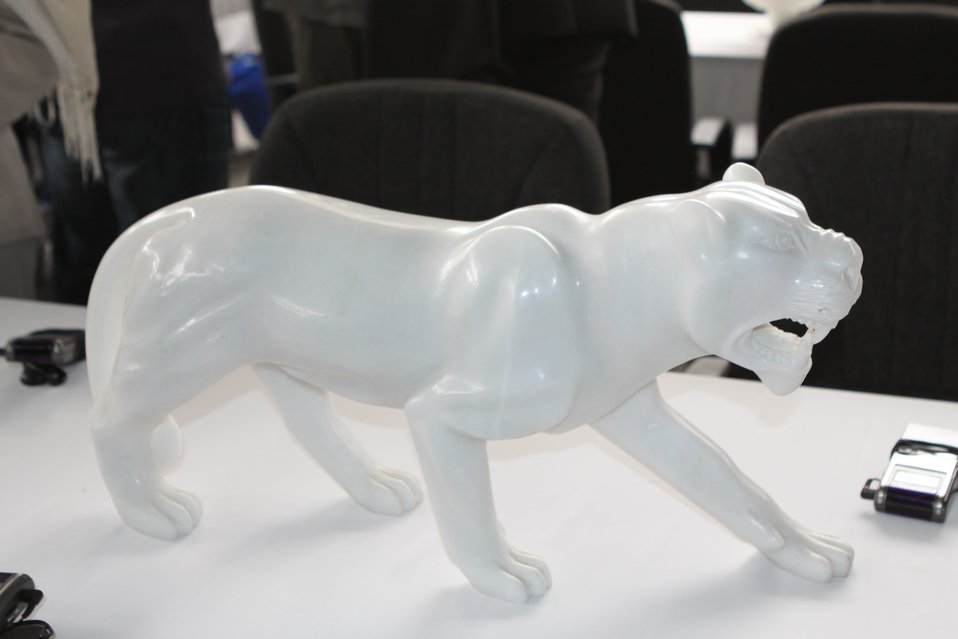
100525 Hirat Marble Conference 130